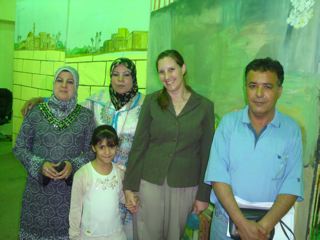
PRT Karbala PDO Cynthia Hogle With Actors in Karbala

PRT Karbala PDO Cynthia Hogle speaks with actors on the set following the performance of their play in Karbala Province, Iraq, May 15, 2010.